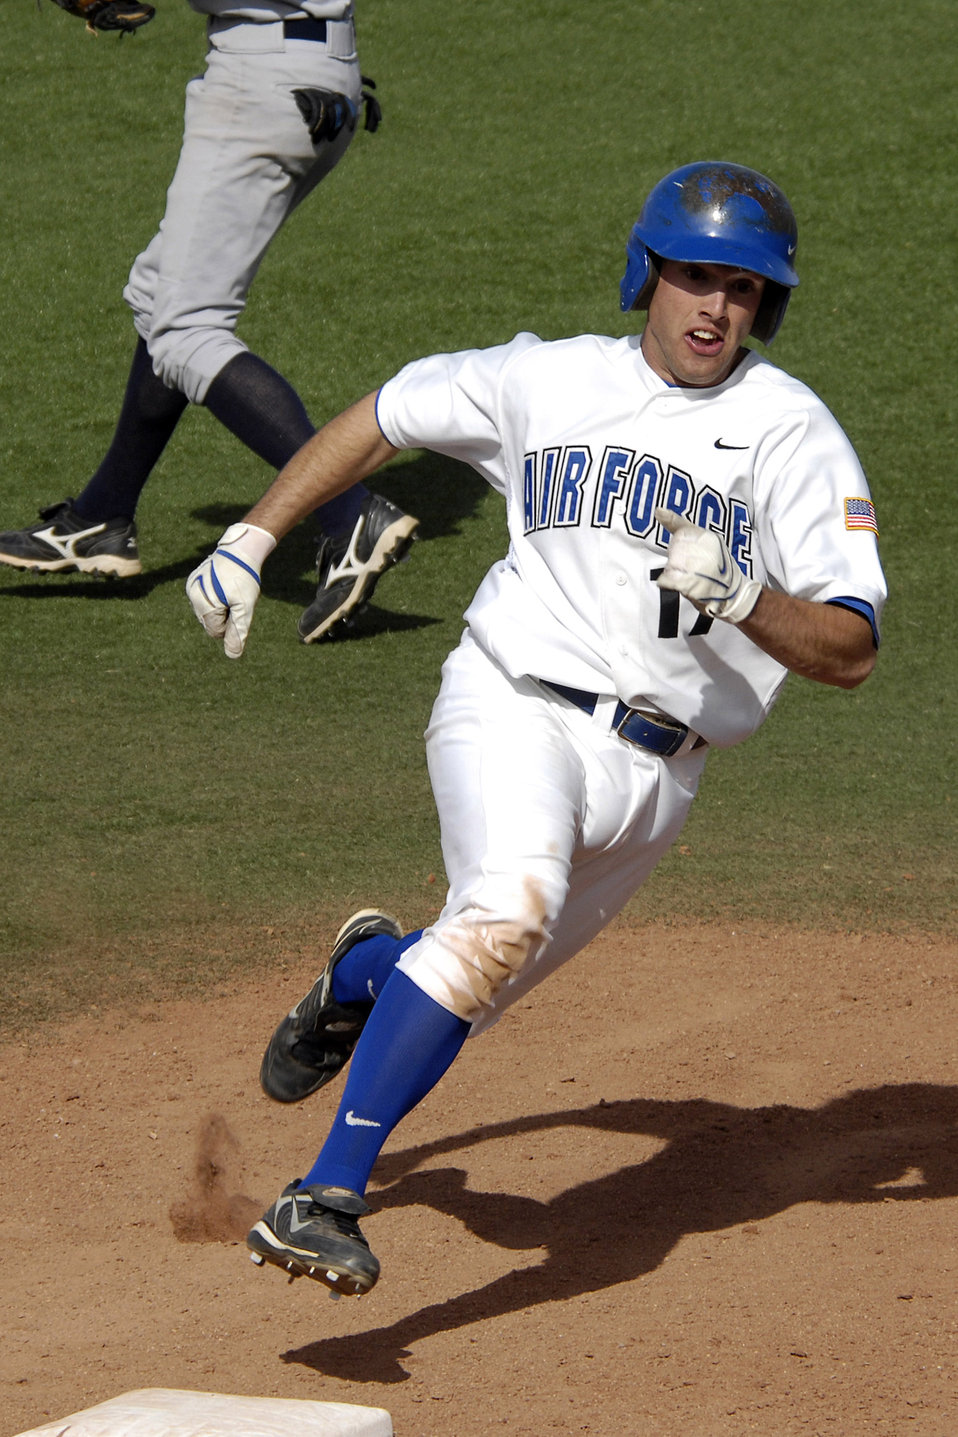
Air Force Rallies To 10th Inning Win Over Colorado Christian

Junior third baseman Jason Griggs rounds third base headed for an RBI as the Falcons rallied to a 10th inning 9-8 win against Colorado Christian in non conference baseball action at the Academy's Falcon Field. Griggs went 2 for 3 at the plate as Air Force tallied 12 hits and did not commit an error in the field on the day. The Falcons improve to 11-19 on the season.